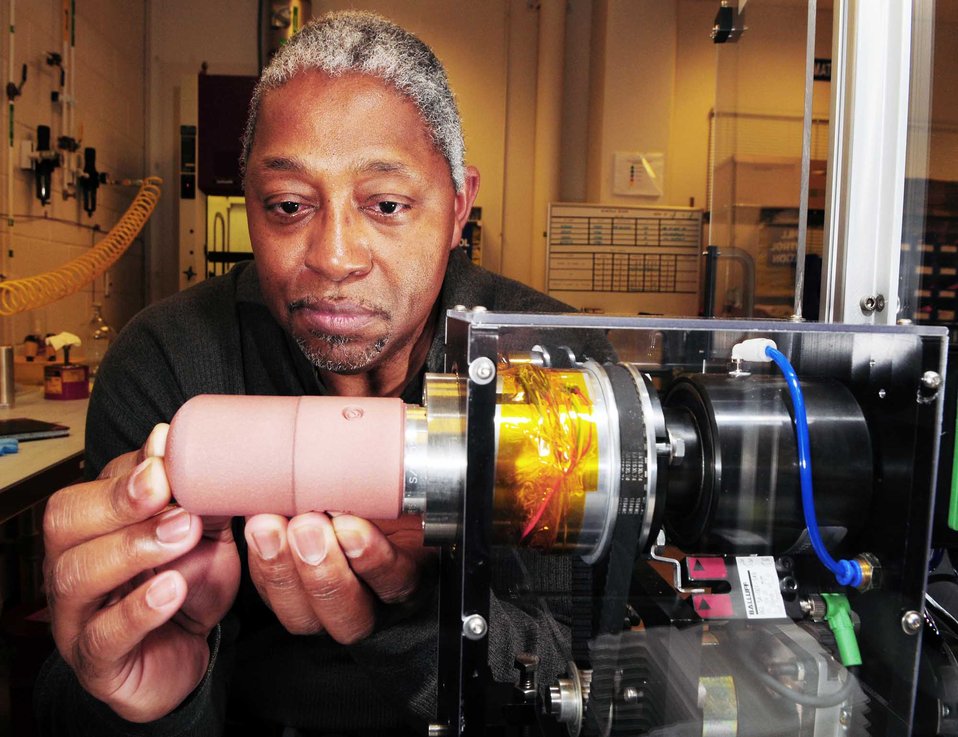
Aircraft Assurance Program at Sandia National Laboratory.